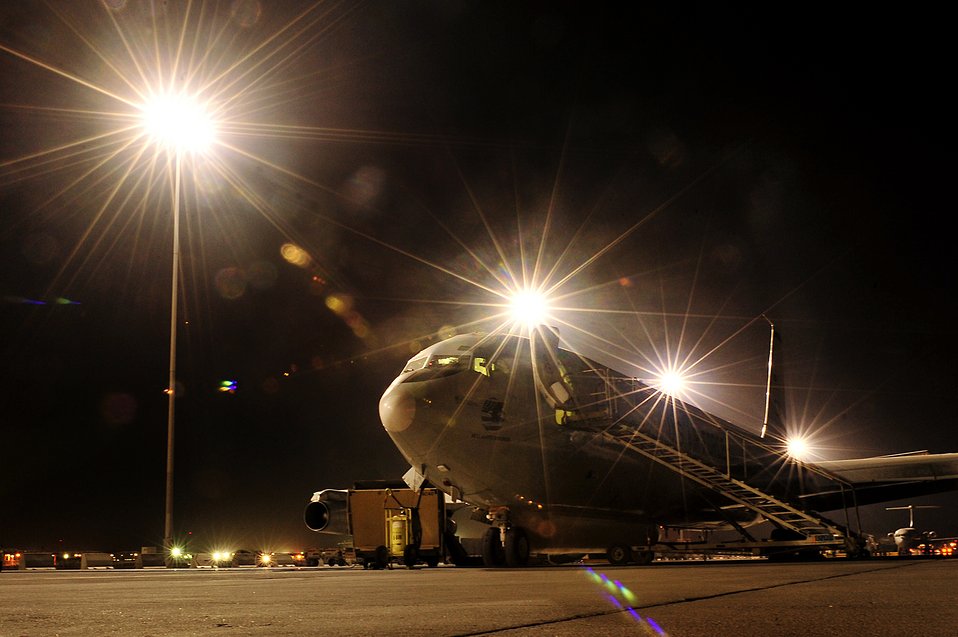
Joint STARS in the Desert Sky

A U.S. Air Force E-8C Joint Surveillance Target Attack Radar System (Joint STARS) from the 7th Expeditionary Air Combat and Control Squadron sits on the ramp before a mission over Iraq on Sept. 1. This flight marks 116th Air Control Wing’s Joint STARS 40,000 combat hours supporting the Global War on Terror. The E-8C Joint STARS is an airborne battle management, command and control, intelligence, and reconnaissance platform.